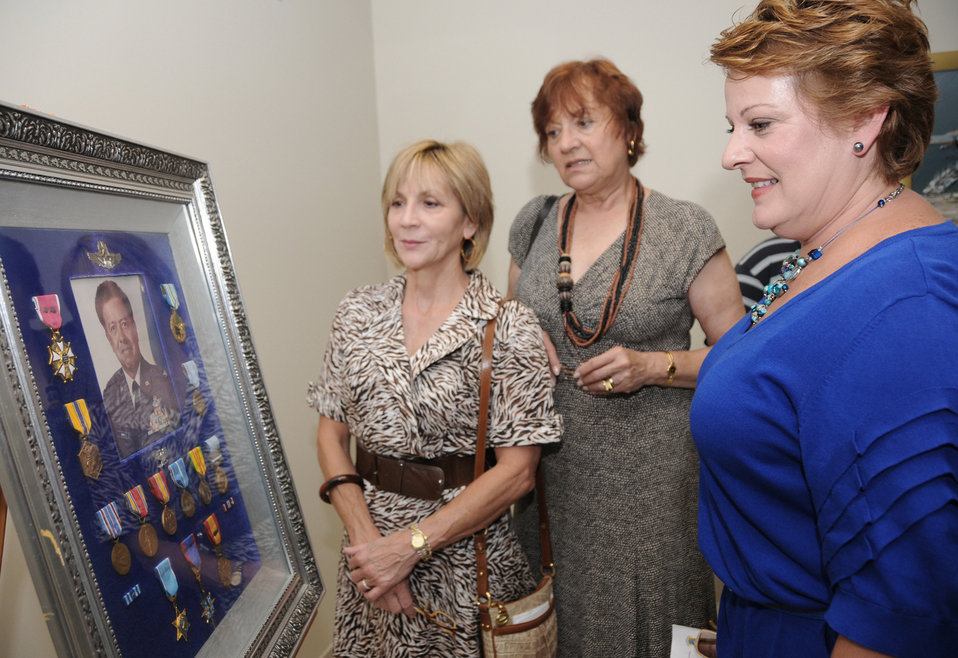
Aircraft maintenance facility dedicated to Tuskegee Airman

Airmen from Keesler Air Force Base, Miss., performed a dedication ceremony of the Consolidated Aircraft Maintenance Facility named after Col. (Ret.) Lawrence Roberts who served as a Tuskegee Airman and adopted Biloxi, Miss., as his home. The $22.6 million facility will be used to maintain the C-130J six-bladed composite propeller, and many other significant maintenance capabilities. The Roberts' family, along with more than 250 community and civic leaders, attended the ceremony.